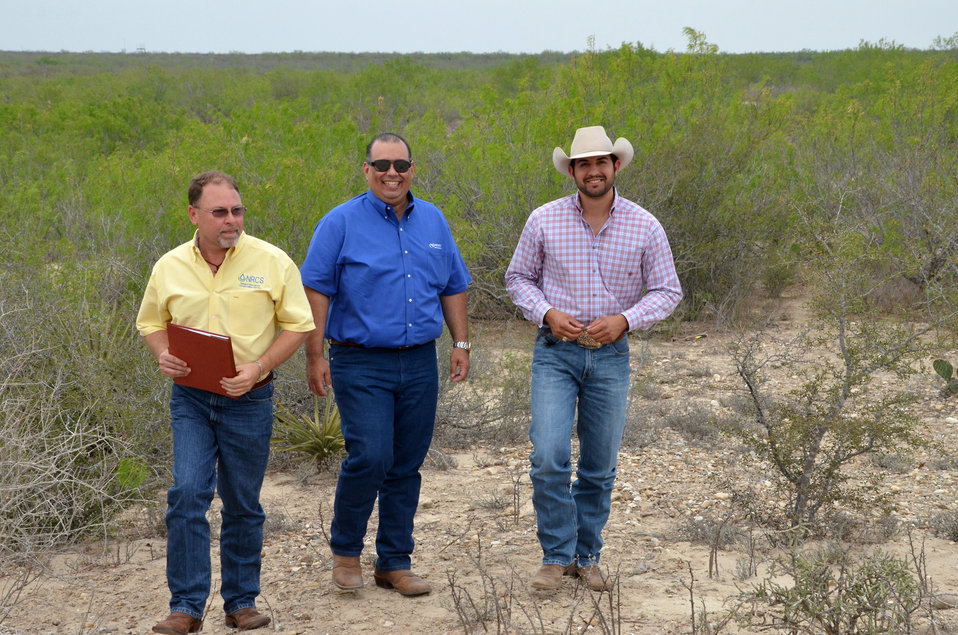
Espinoza2

(L to R) U.S. Department of Agriculture (USDA) Natural Resource Conservation Service (NRCS) district conservationist Flavio Garza, farmer Jorge Espinoza, and USDA NRCS rangeland management specialist Henry Gonzalez visit Espinoza’s ranch in Laredo, TX to discuss forage establishment.